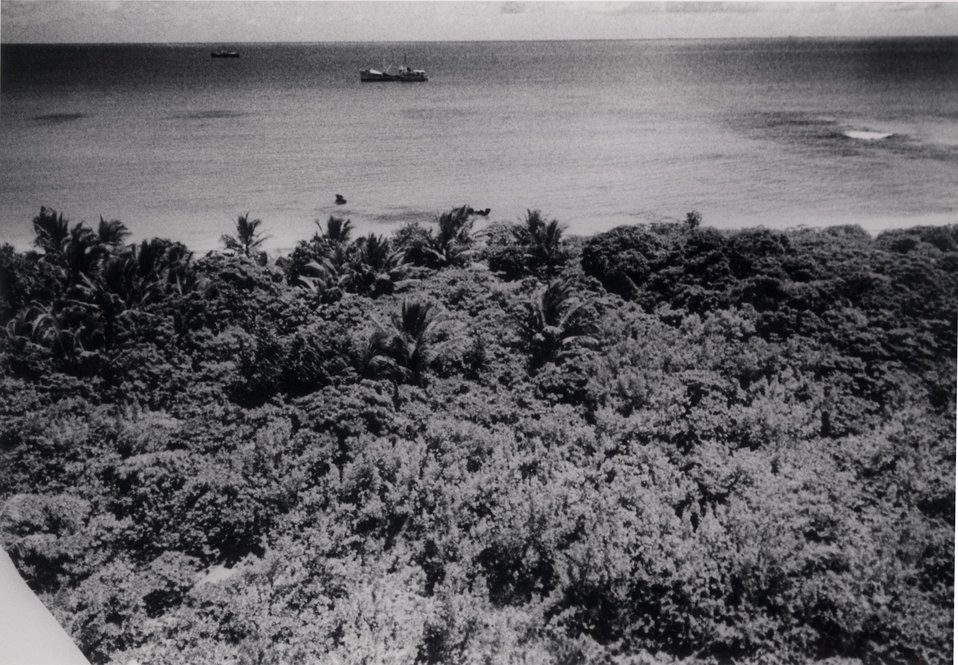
Scientists check the condition of the Bikini islands six years after last nuclear testing took place there.